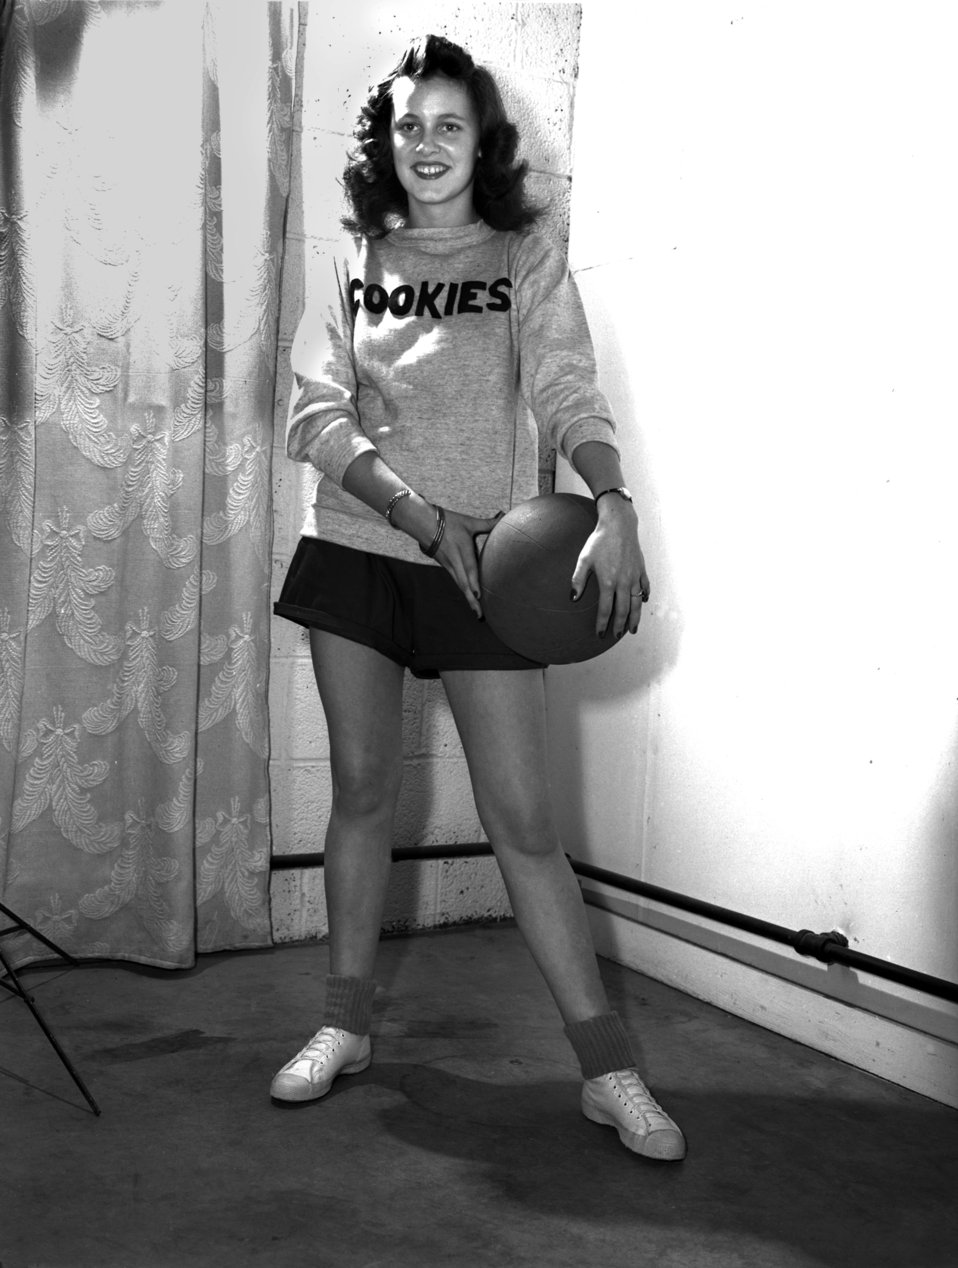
Basketball Player Oak Ridge

3239-2 DOE photo Ed Westcott 1-15-1947 Oak Ridge Tennessee